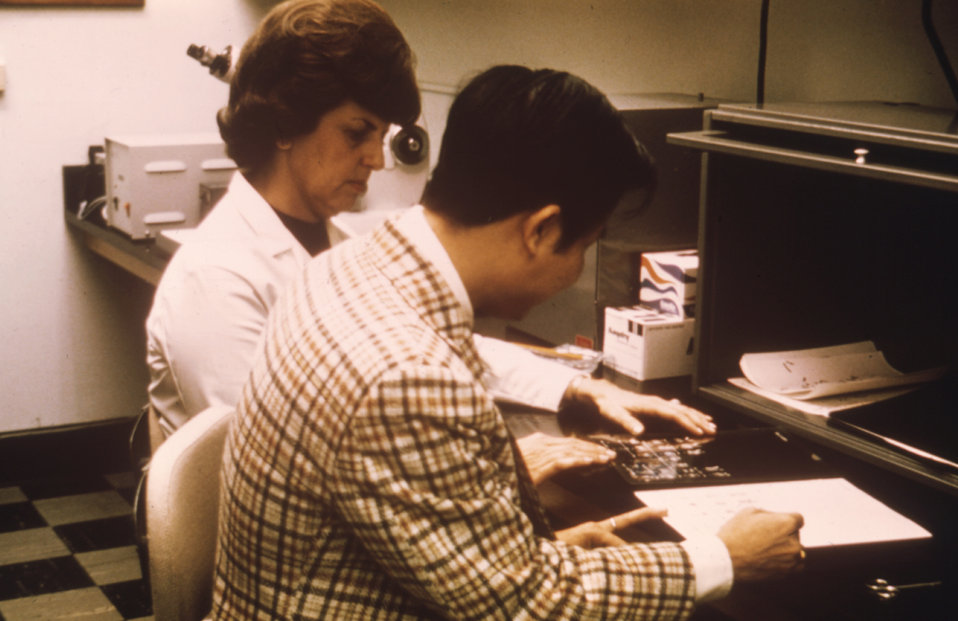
These laboratorians are shown preparing and analyzing karyotypes of amniotic fluid cell cultures.